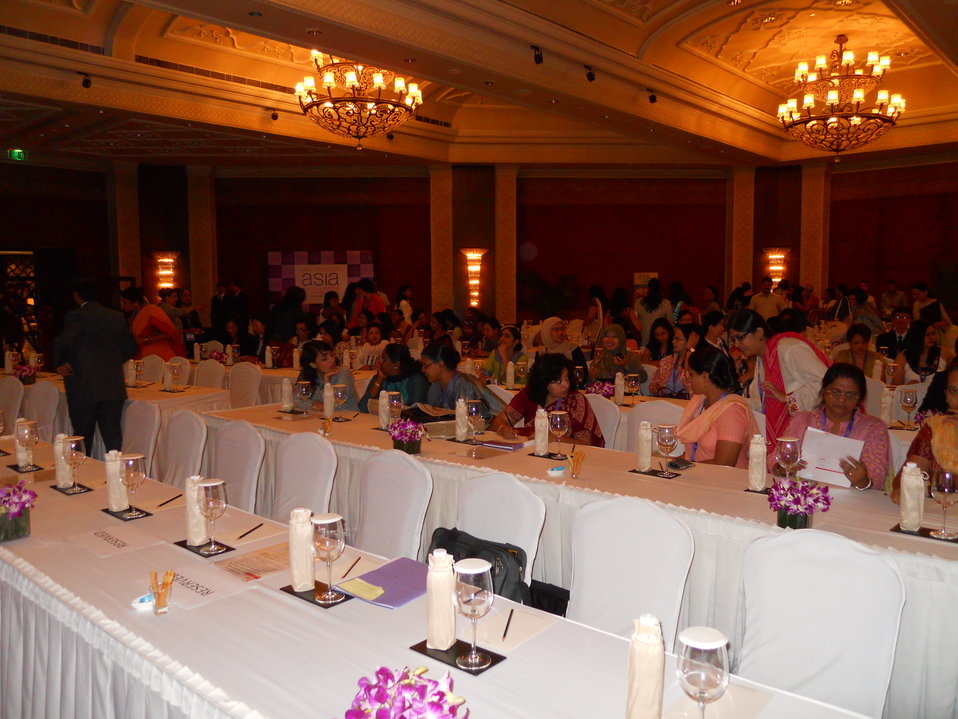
Summit participants chat at the opening of the Vital Voices Women's Empowerment Summit in New Delhi, India, on September 15, 2010.